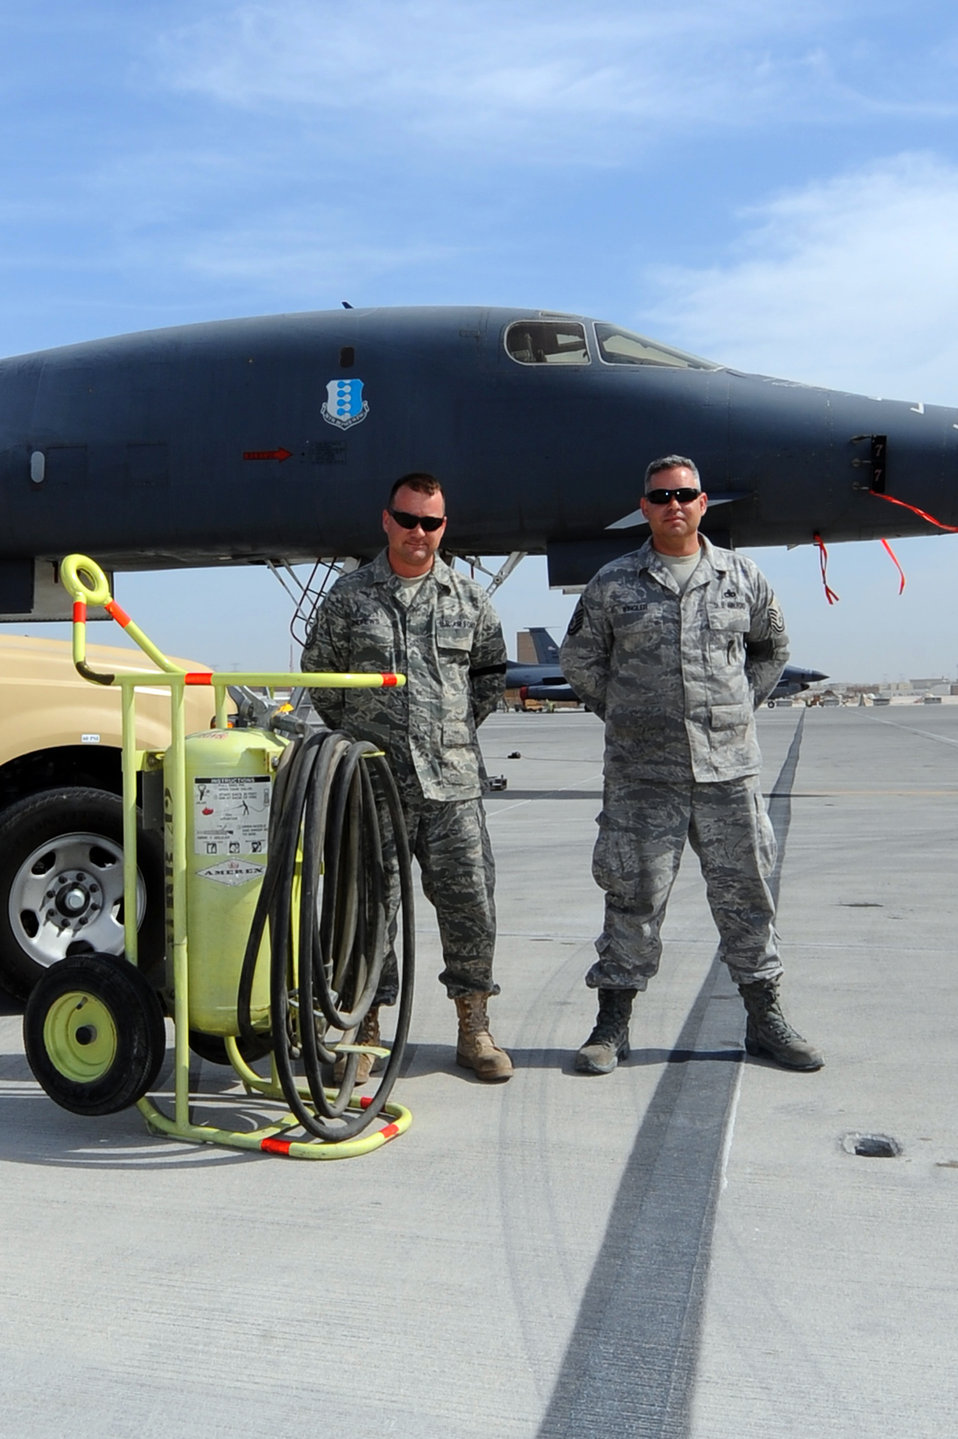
2 NCOs helps save aircrew, B-1B

Master Sgts. Alan Andrews (left) and Michael Wingler stand in front of the B-1B Lancer that they saved alongside the rescue equipment Jan. 23, 2010, at an air base in Southwest Asia. Their actions ensured the safety of four aircrew members and prevented the possible destruction of a munitions-loaded aircraft at the base Asia Jan. 28, 2010. Sergeants Andrews and Wingler are both 37th Aircraft Maintenance Unit production supervisors.